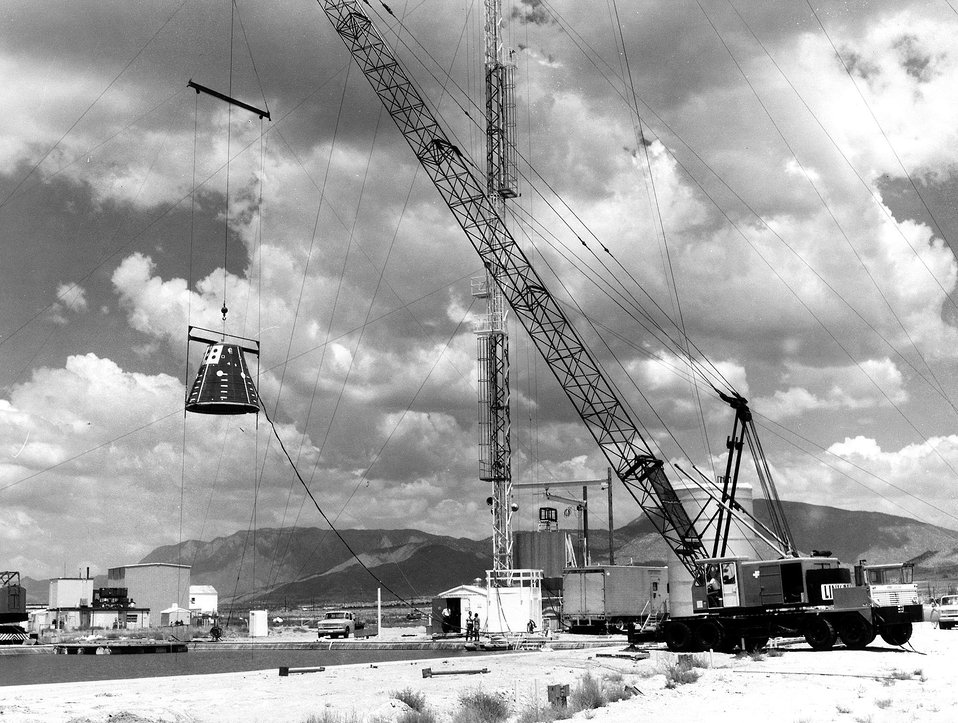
1983 SHUTTLE NOSE CONE DROP TEST AT SANDIA.

A NOSE CONE SIMILAR TO THOSE USED FOR THE U.S. SPACE SHUTTLE'S RECOVERABLE ROCKET BOOSTERS WAS READIED FOR A WATER DROP TEST AT SNL.